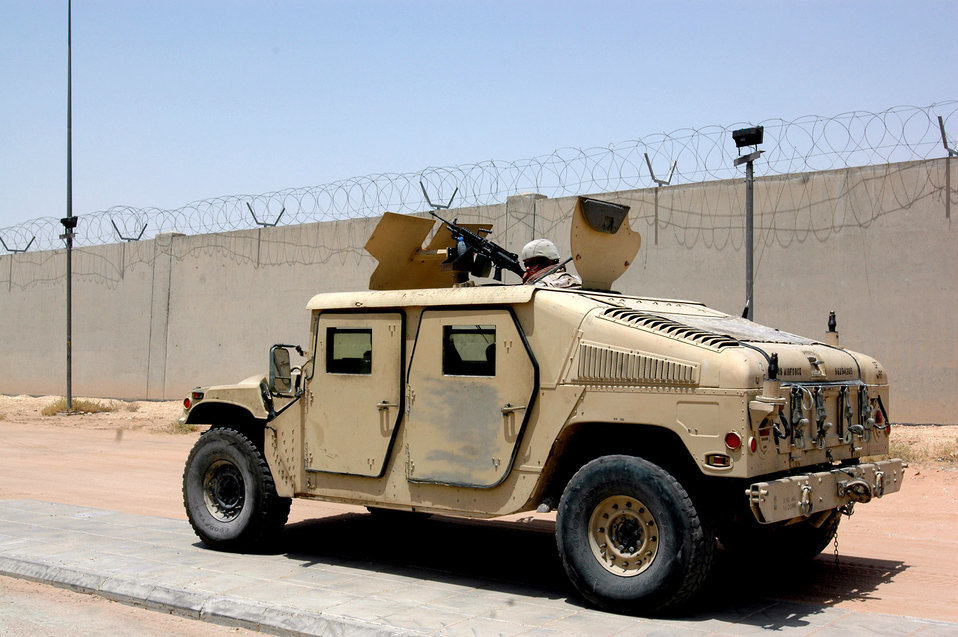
'300' Airmen provide world-class base defense

A security forces Airman with the 64th Air Expeditionary Group stands watch over fellow Airmen as they infiltrate a building during an exercise Aug. 20 in Southwest Asia.